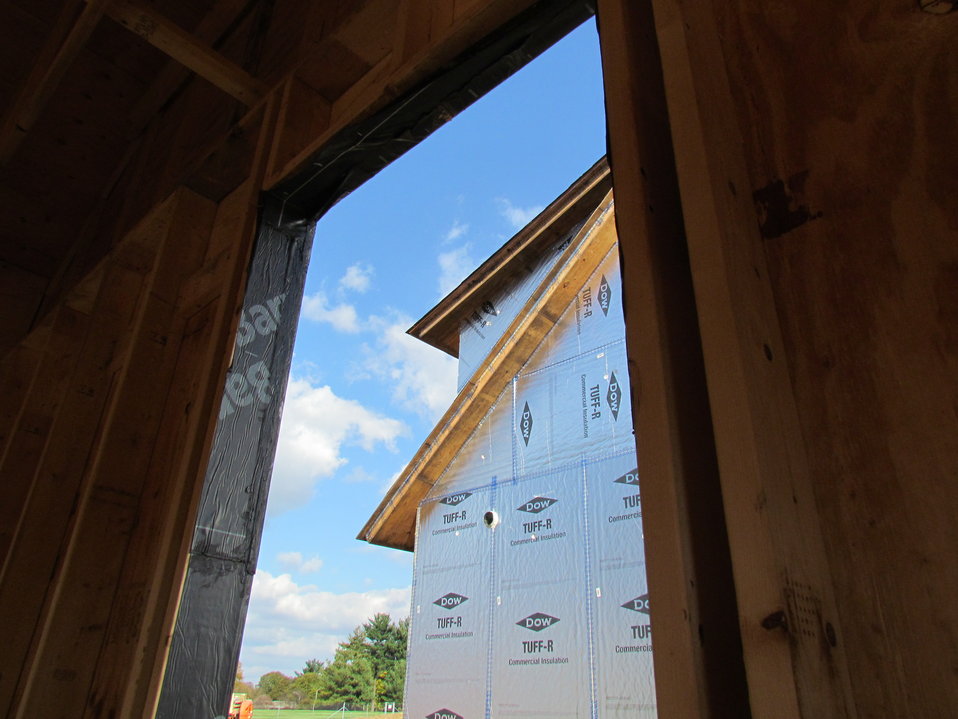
Net-Zero Energy Residential Test Facility - Photo taken looking out of breezeway doorway in garage towards north east corner of house.